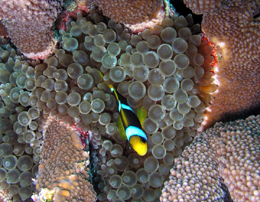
Anemone fish cuddling with bubble-tip anemone in staghorn coral - Baker Island NWR

Extensive thickets and mounds of staghorn coral populate the eastern side of Baker Island in the central Pacific Ocean.